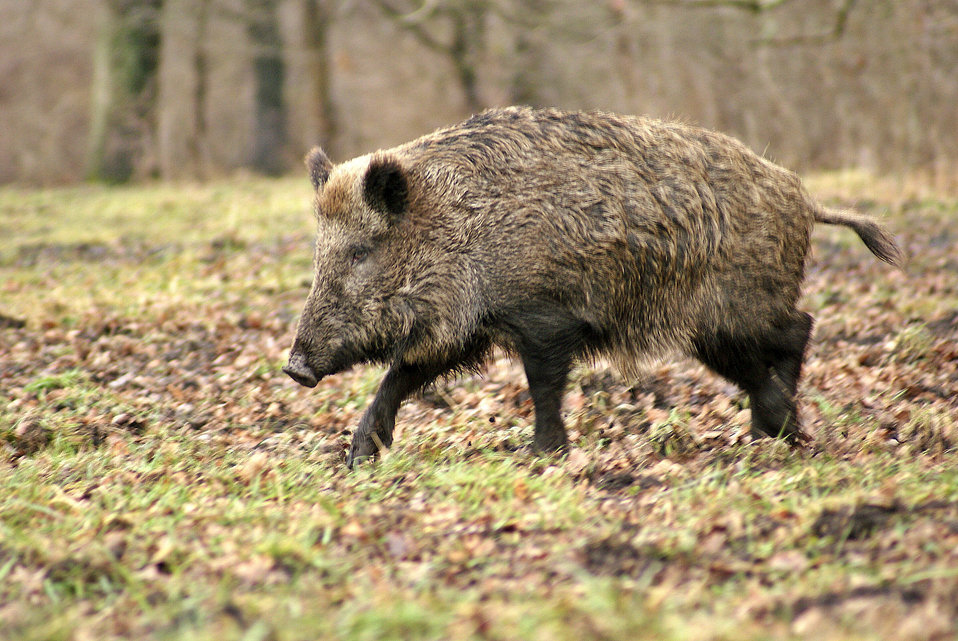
Wild boar forest

Escaping boar.